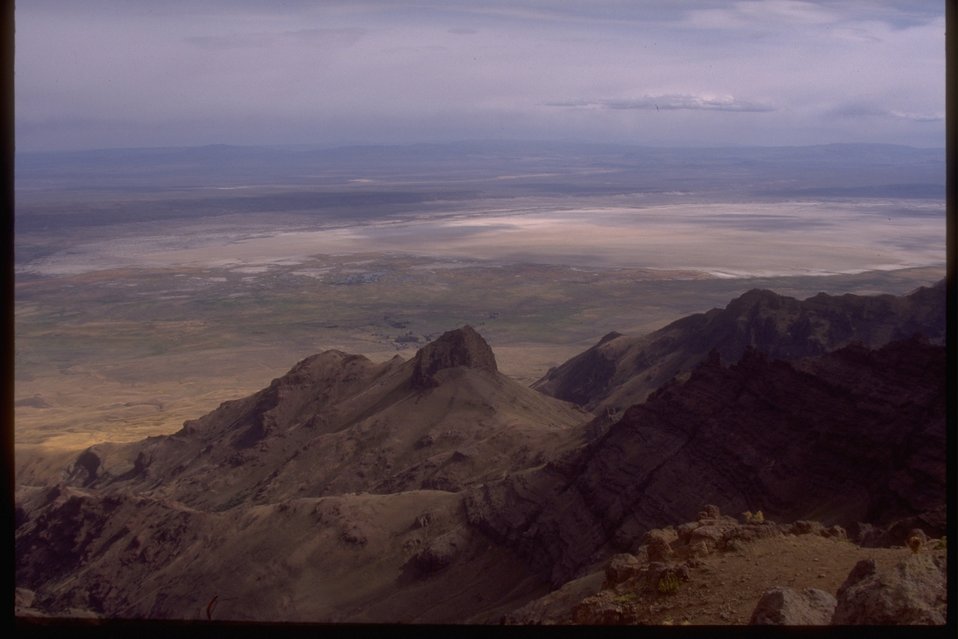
View from Steens Mountain to the east toward Alvord Desert.